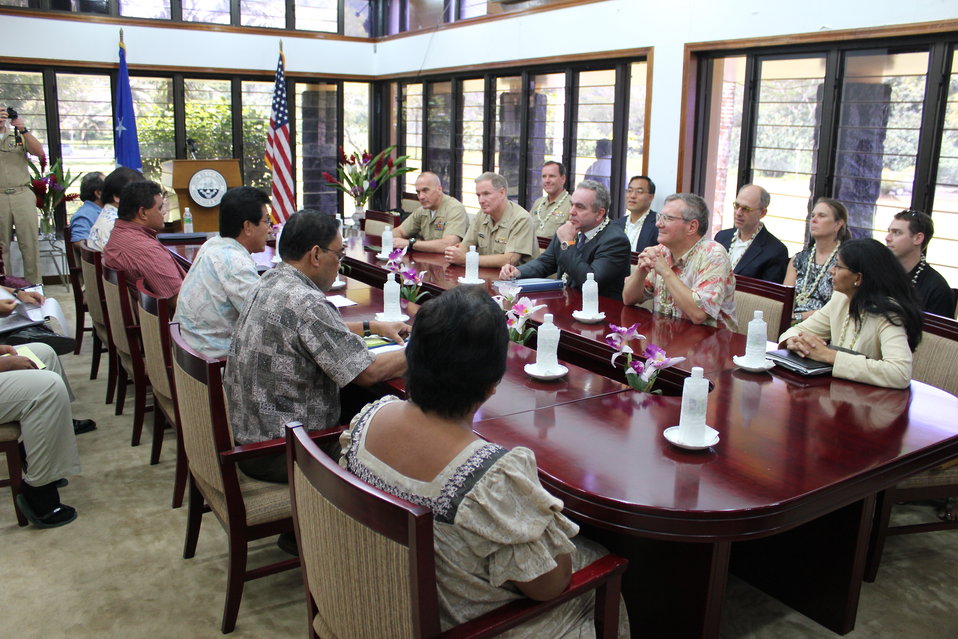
Assistant Secretary Campbell Meets With Federated States of Micronesia President Mori and His Executive Cabinet

Assistant Secretary of State for East Asian and Pacific Affairs Kurt Campbell, right center, meets with Federated States of Micronesia President Emanuel 'Manny' Mori, left center, and his Executive Cabinet in Palikir, Pohnpei, on July 1, 2011. Assistant Secretary Campbell is leading an inter-agency Pacific Island tour to enhance bilateral political, economic, and security relations in the region. The U.S. Delegation includes: Pacific Fleet Commander Admiral Patrick Walsh, Office of the Secretary of Defense South/Southeast Asia Principal Director Brigadier General Richard Simcock, and U.S. Agency for International Development (USAID) Assistant Administrator for Asia Nisha Biswal.